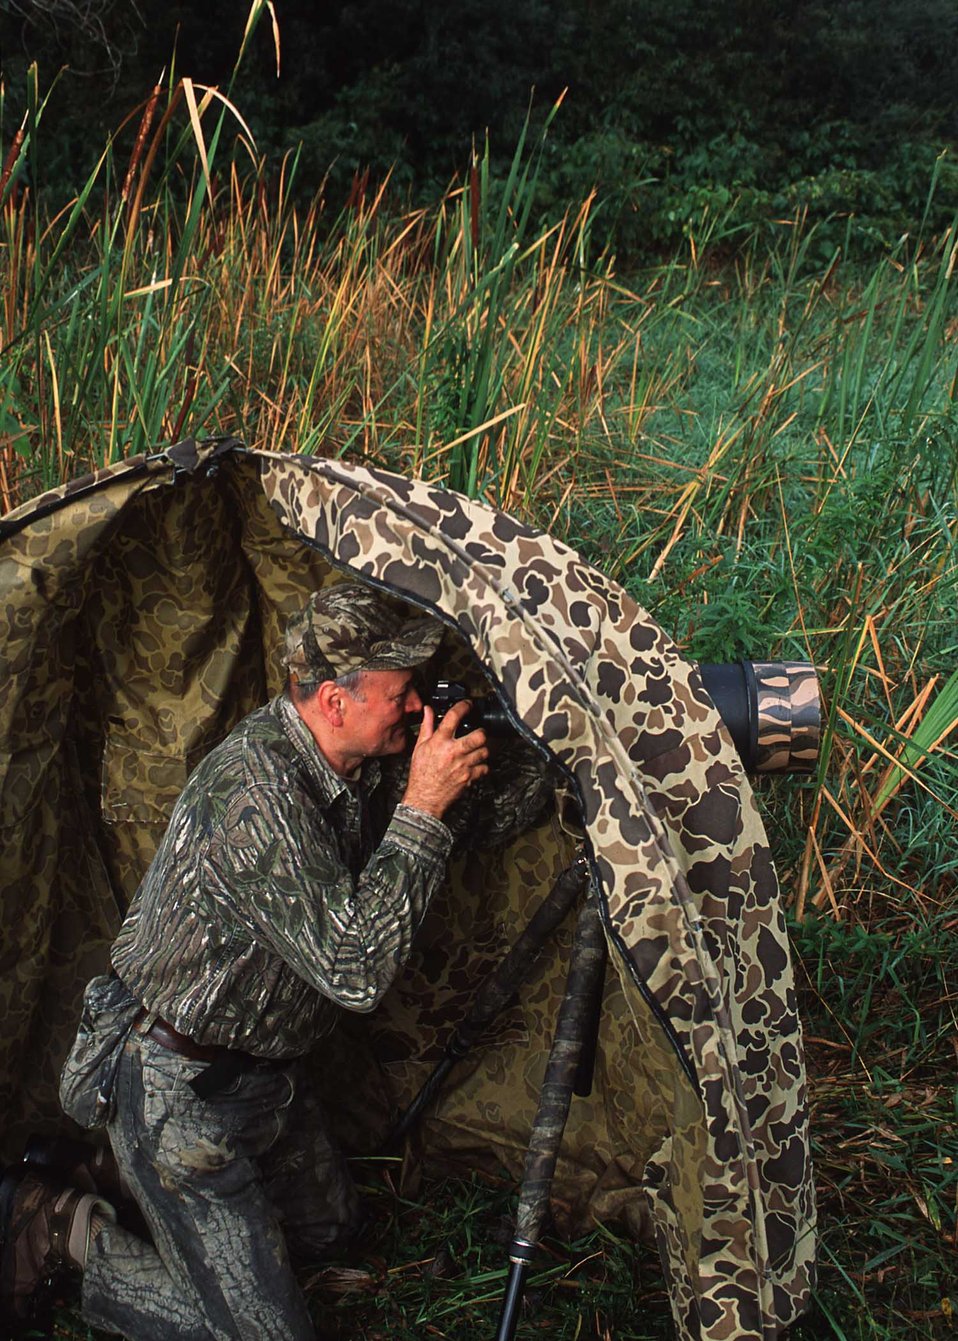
A wetland area and conservation buffer make for excellent wildlife and wildlife photography along Bear Creek in central Iowa.